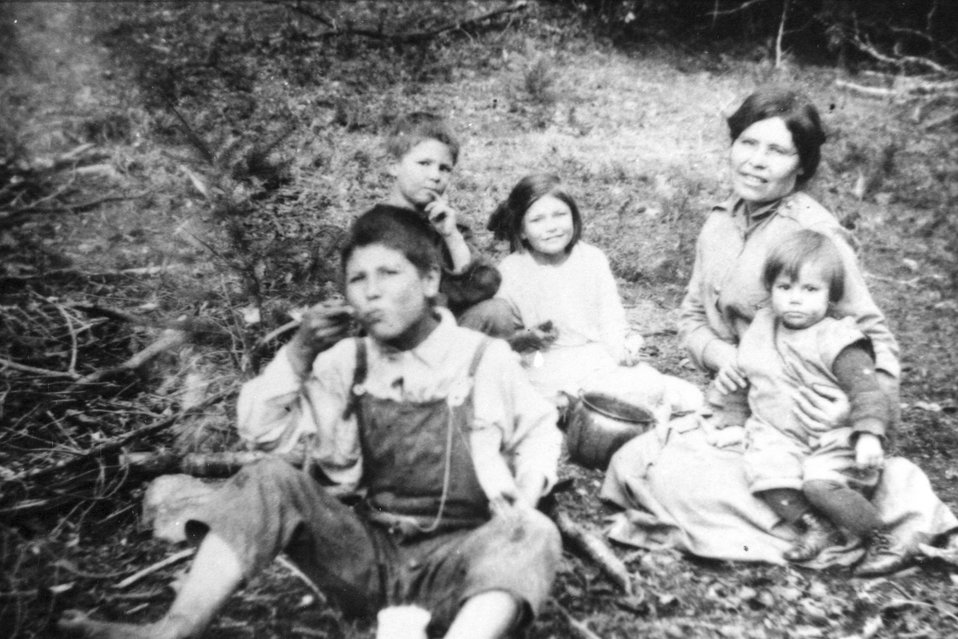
Viola Frye (Mrs. Leo), Leslie, Elwin, Moni, Gerald with Viola.